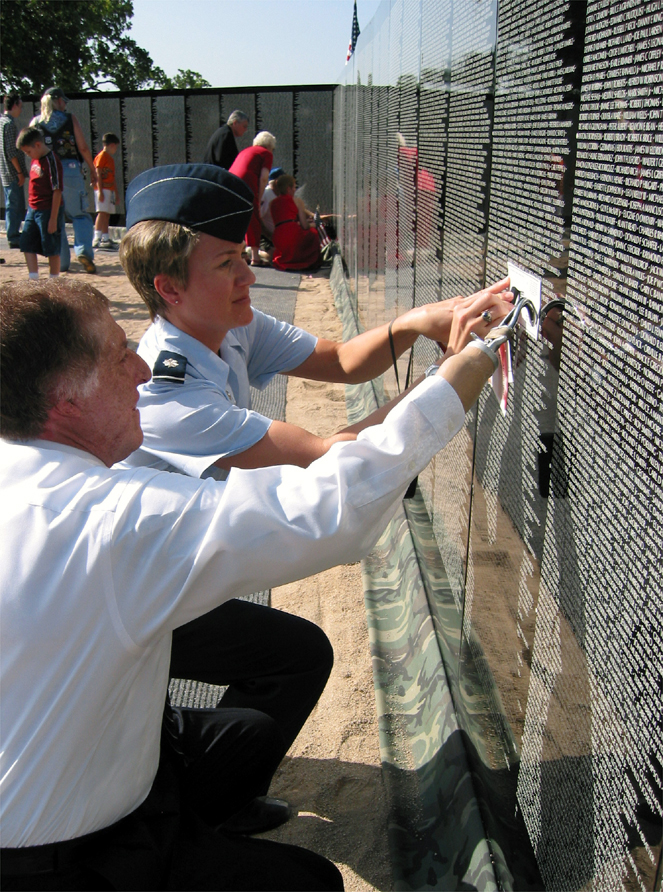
Moving Wall Memorial

KERRVILLE, Texas -- Lt. Col. Jennifer Graham and Roberto Barrera take an impression of her father's name from the Vietnam Moving Wall Memorial here. Graham is the 47th Mission Support Squadron commander at Laughlin Air Force Base, Texas. Barrera is flight chief of the base's family support center.